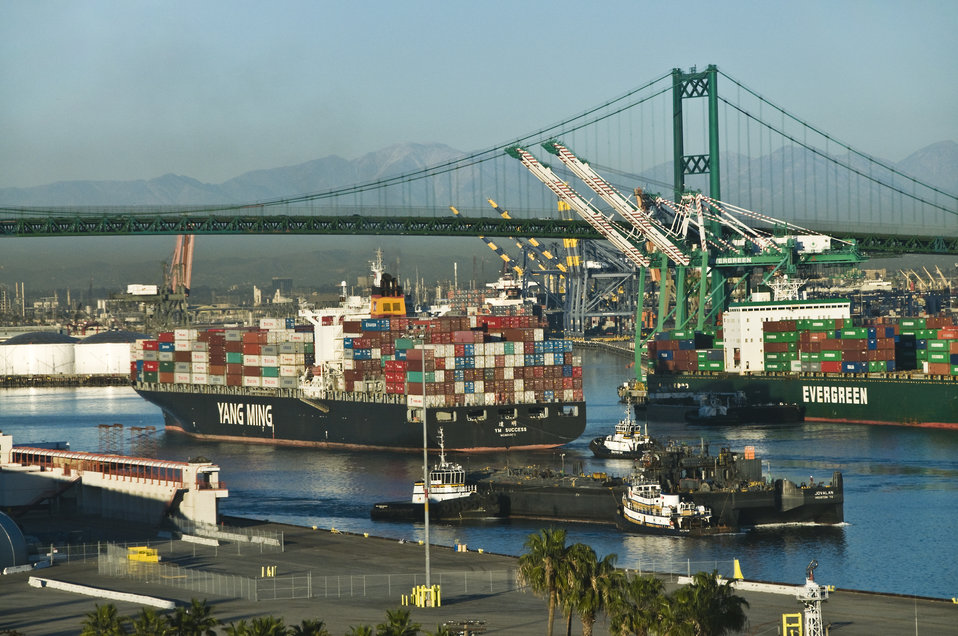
FDA’s China Offices Focus on Product Safety

Food and other imports enter the United States from China and other countries at the Los Angeles harbor. Increased collaboration between China and the United States means safer products are arriving on our shores for U.S. consumers. For more information, read this FDA Consumer Update: www.fda.gov/ForConsumers/ConsumerUpdates/ucm284461.htm

Consumer Updates are a quick and easy way to pick up important health information for you and your family. For a complete list of Consumer Updates see the Consumer Updates photo set: www.flickr.com/photos/fdaphotos/sets/72157624900896241/.

For the latest Consumer Updates go to: www.fda.gov/forconsumers/consumerupdates